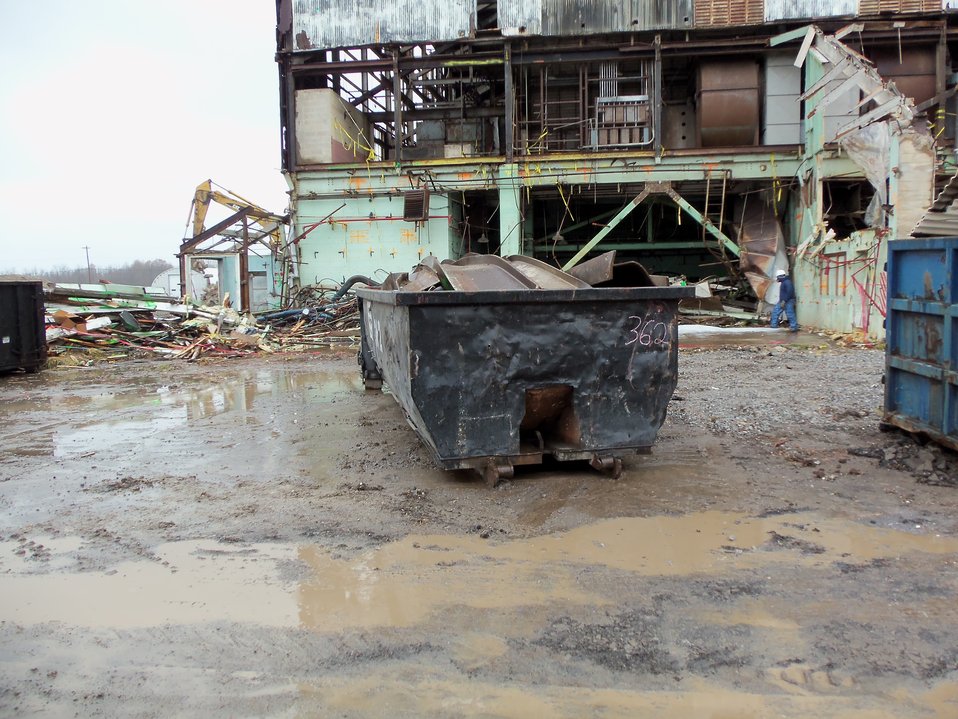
Scrap metal and debris.
Activities from the Niagara Falls Storage Site, which is associated with the former Lake Ontario Ordnance Works. Formerly Utilized Sites Remedial Action Program (FUSRAP), a program initiated in 1974 to identify, investigate and clean up or control sites that were part of the Nation's early atomic energy and weapons program. Activities at the sites that are eligible for FUSRAP were conducted by Manhattan Engineer District (MED) or the Atomic Energy Commission (AEC), both predecessors of the Department of Energy (DOE). The U.S. Army Corps of Engineers was assigned management of FUSRAP by Congress in 1997.